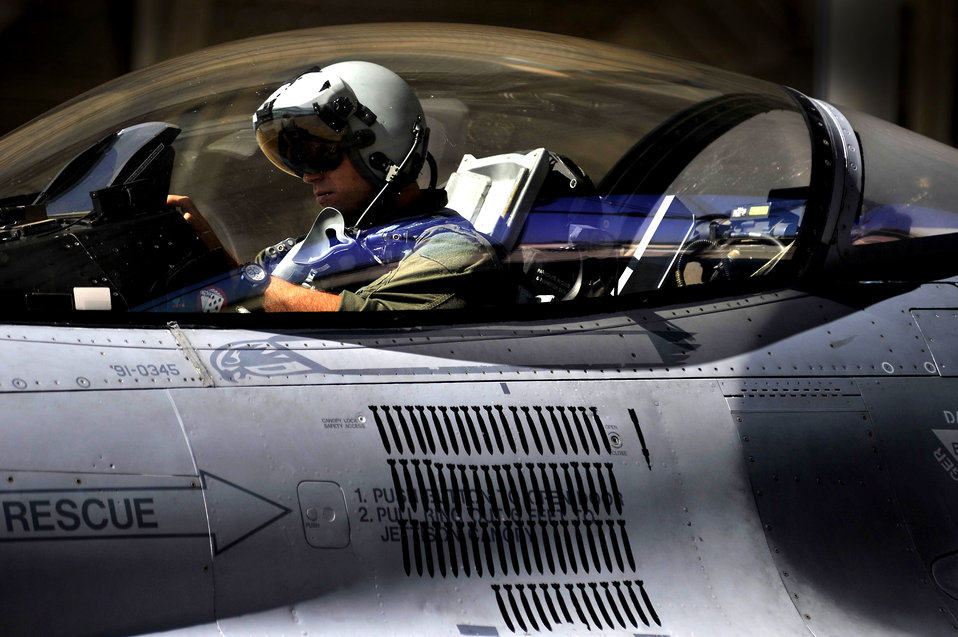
Ready to launch

An F-16 Fighting Falcon pilot with the 77th Fighter Squadron prepares for takeoff, Oct. 5, 2011, at Shaw Air Force Base, S.C. Crew chiefs with the 77th FS launched several F-16s to help pilots prepare for real world missions.